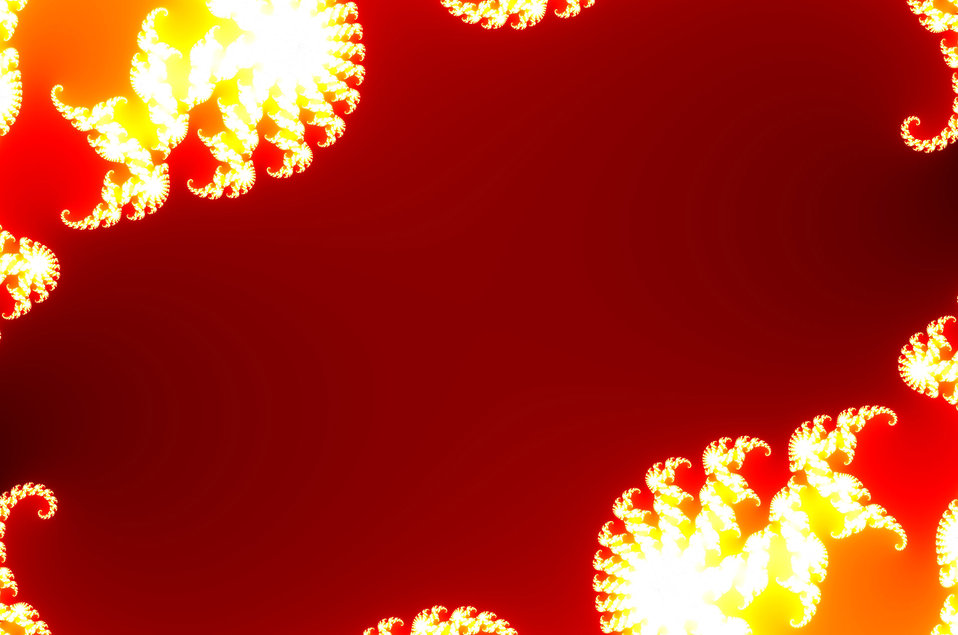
Abstract background pictures.